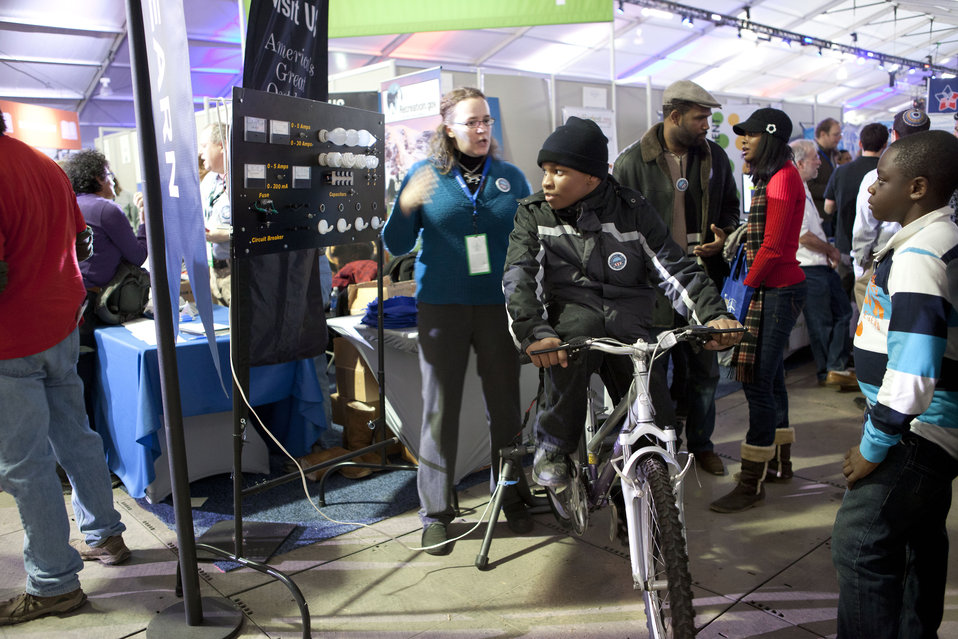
What's your #energypledge?